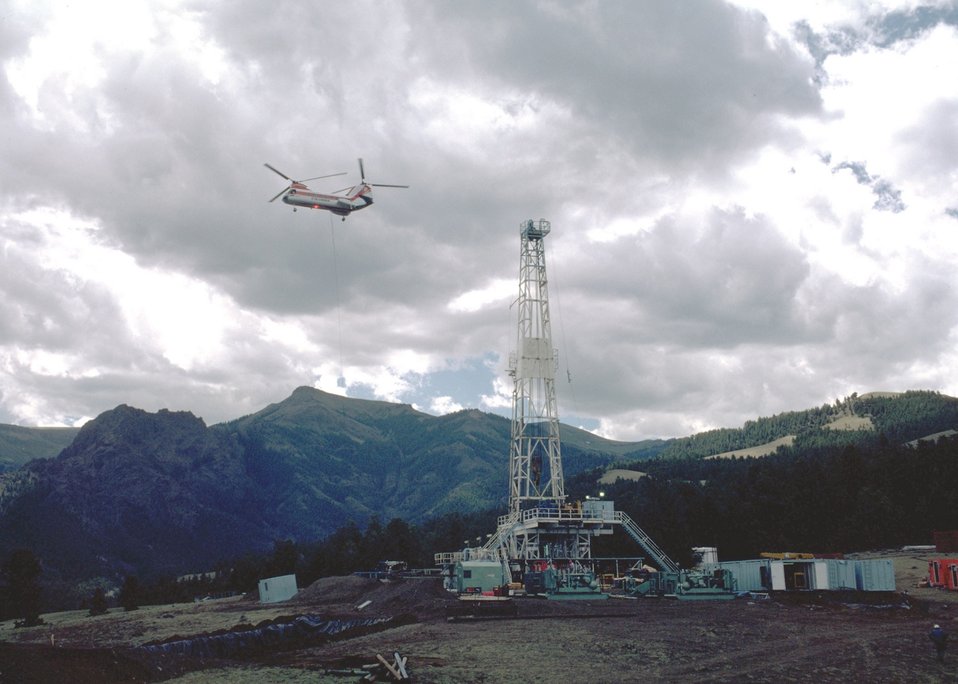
Oil deep well rig, Wyoming.